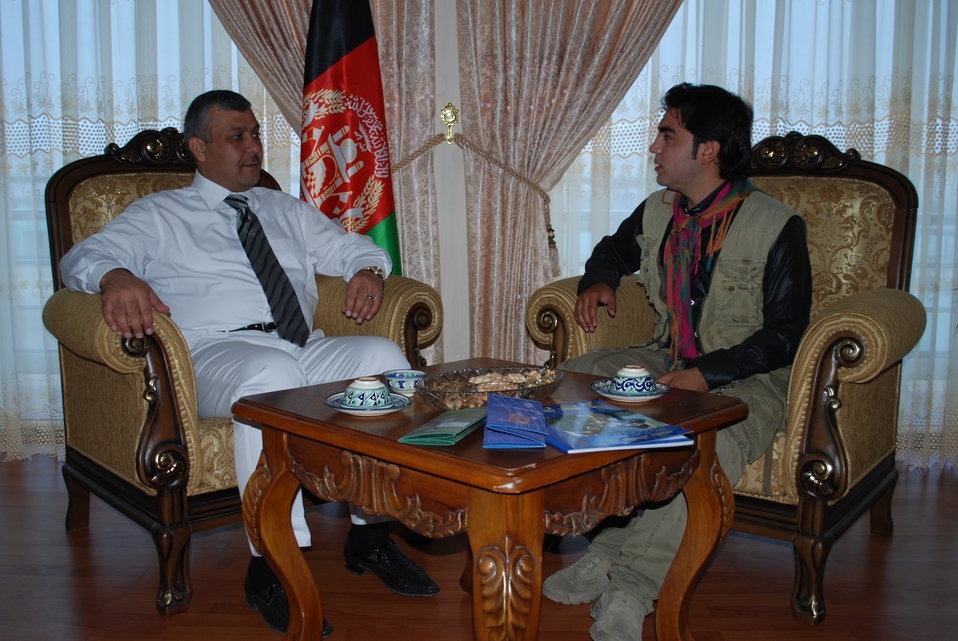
'On the Road' in Balkh Province